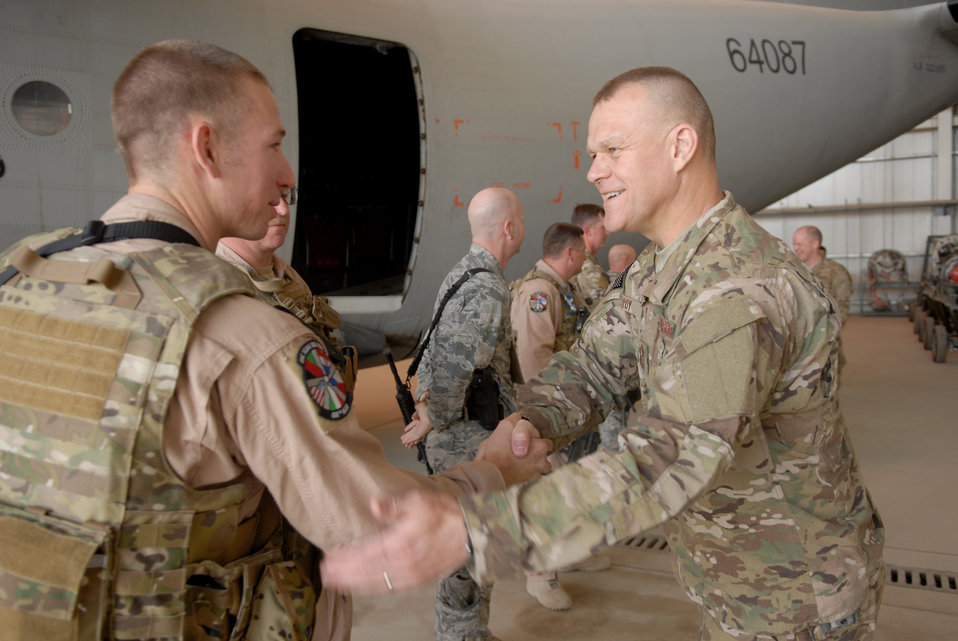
Chief Roy

Chief Master Sgt. of the Air Force James A. Roy visits with Airmen from the 438th Air Expeditionary Wing June 17, 2011, at the Afghan air force compound in Kabul, Afghanistan.